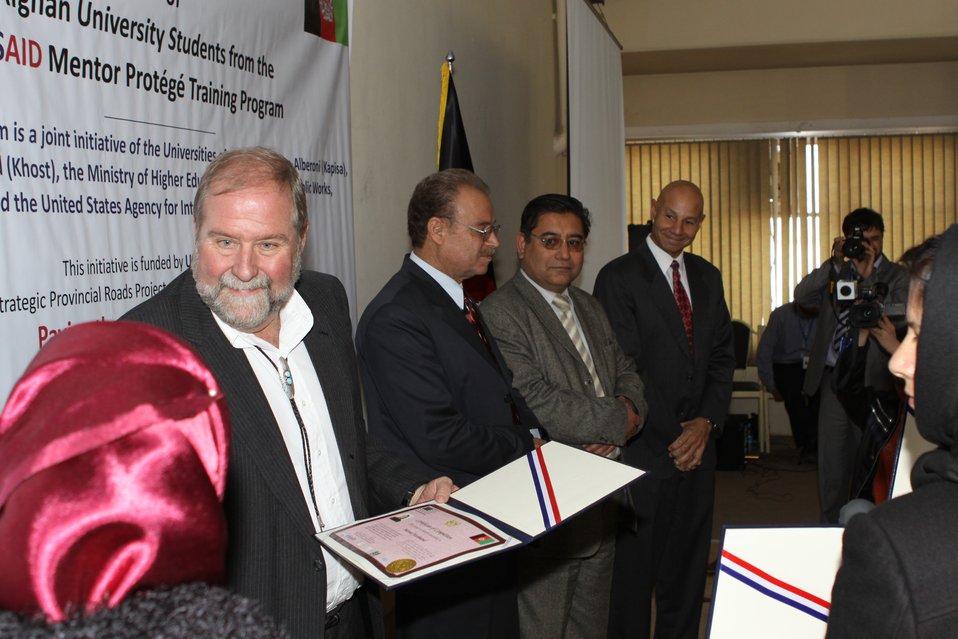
Female University Students Complete Internship

Kabul, Afghanistan | March 16, 2011 – In response to a demand for qualified Afghan engineers, Kabul University celebrated completion of an intensive five-month Mentor Protégé Training Program today by 10 female fourth year university students. The Training Program is a joint effort between the Government of the Islamic Republic of Afghanistan, the U.S. Agency for International Development (USAID), and the Universities of Kabul, Kandahar, Alberoony in Kapisa, Shiekh Zayed in Khost. The graduation ceremony highlighted collaboration with these national institutions in building the technical skills of young Afghans, made possible by USAID.

Four of the interns are engineers, while the remaining six are from the faculties of computer science, economics, and psychology.

Speaking about the event, H.E. Minister of Public Works Abdul Qudus Hamidi said, “The future of Afghanistan lies in developing the skills of our youth, and the engineering skills of these graduates today represent a small but important step forward for the country.”

Keynote speakers at the ceremony included H.E. Deputy Minister of Higher Education Abdul Rahim; USAID Senior Deputy Mission Director Robert Hellyer; and Chancellor of Kabul University Professor Hamidullah Amin. Approximately 150 people, including current and former students attended the graduation.

Launched last year, the Mentor Protégé Training Program has provided qualifying students the opportunity to intern with USAID’s Strategic Provincial Roads-South and East Afghanistan project and gain practical experience in a real work environment. The goal of the program was to offer interns the opportunity to gain hands-on experience to reinforce their formal studies. A total of 30 students from four national universities have benefitted from this program.

“The promotion of women’s rights is integrated into the overall U.S. Government development strategy and can be found in key programs, including education, healthcare, security, rule of law, political participation, agriculture, and economic development,” said Robert Hellyer. “The U.S. Government is committed to the Afghan leadership of programs that directly enhance development, particularly as it relates to women’s issues.”

This event also highlighted the learning achievements of students and emphasized the importance of hands-on internship programs. The curriculum is designed to instill students with the knowledge and confidence to qualify for engineering positions upon completion of their fourth year at their respective universities.